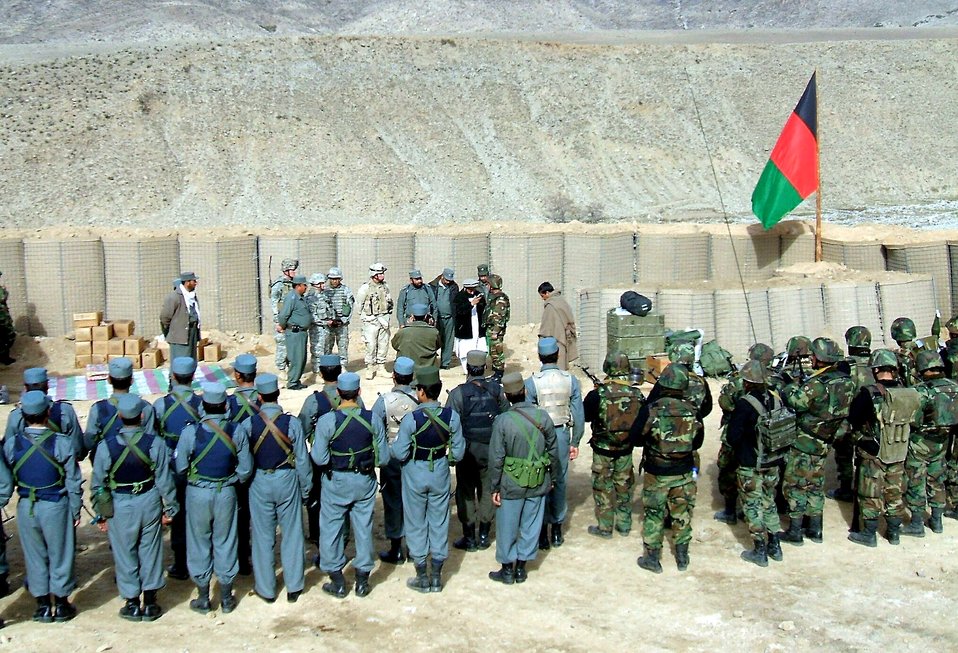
New security base established in Laghman Province

Afghan national security forces stand in formation after the flag-raising ceremony that established Security Base Najil in the Alishang Valley of Laghman Province during Operation West Hammer Dec. 12. West Hammer was aimed at defeating anti-government elements in the Alishang Valley and was carried out primarily by Task Force Chosin and the ANSF.